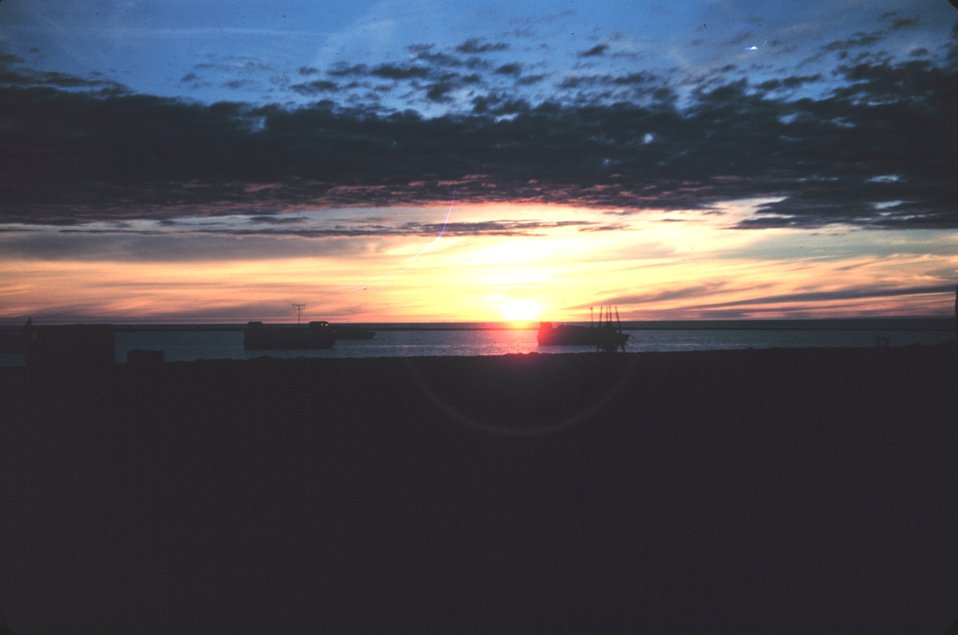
Anchored launches silhouetted in a late summer sunset